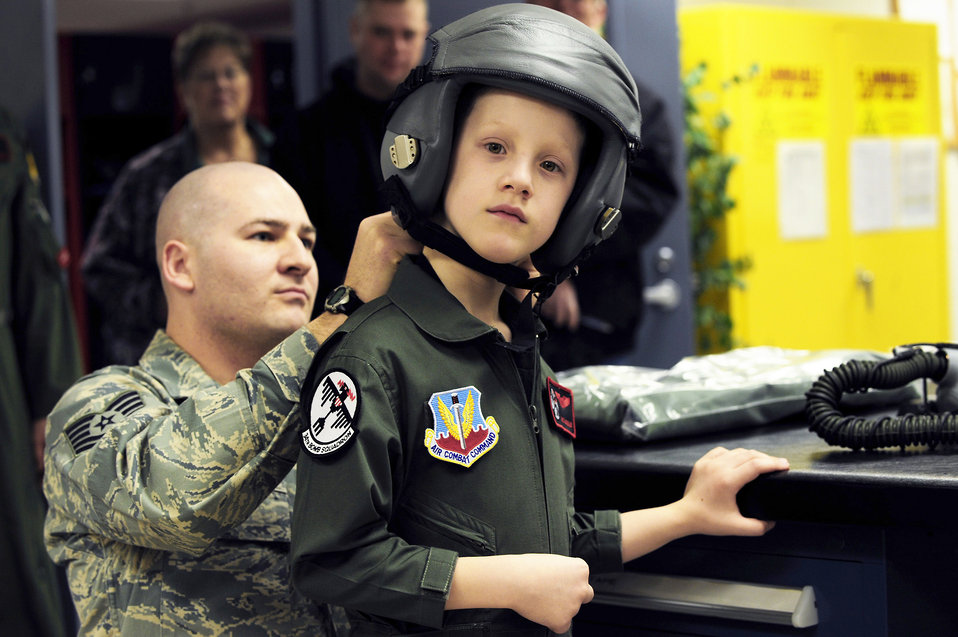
Best day ever

Tech. Sgt. Chris Shapiro assists Aric Lassegard, a 34th Bomb Squadron honorary aircrew member, as he puts on an HGU-55/P aircrew helmet Jan. 13, 2011, at Ellsworth Air Force Base, S.D. Members of the 34th BS gave Aric his own flight suit with a name tag and unit patches, as well as a flyer's helmet with a mask as part of the Aircrew for a Day program. Sergeant Shapiro is the 34th BS aircrew flight equipment assistant NCO in charge.